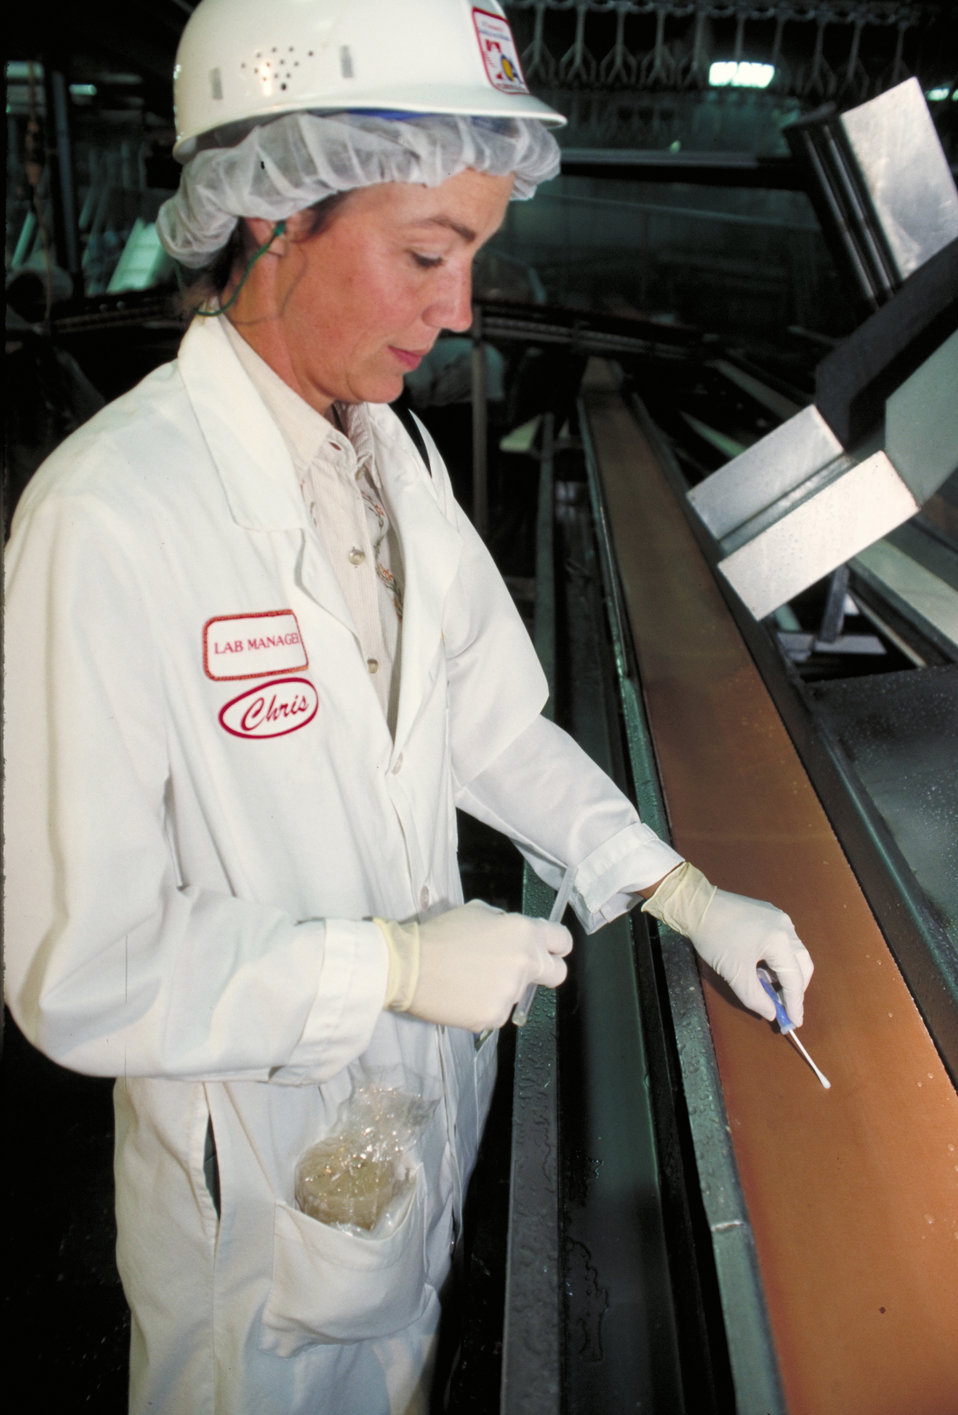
Plant employee conducts sanitation standard operating procedures at a critical control point on operating equipment to ensure that the facility is conducting its operation in a sanitary environment and in compliance with the U.S. Department of Agriculture’s (USDA) Food Safety Inspection Service (FSIS) Hazard Analysis and Critical Control Points (HACCP) requirements on May 13, 1996.